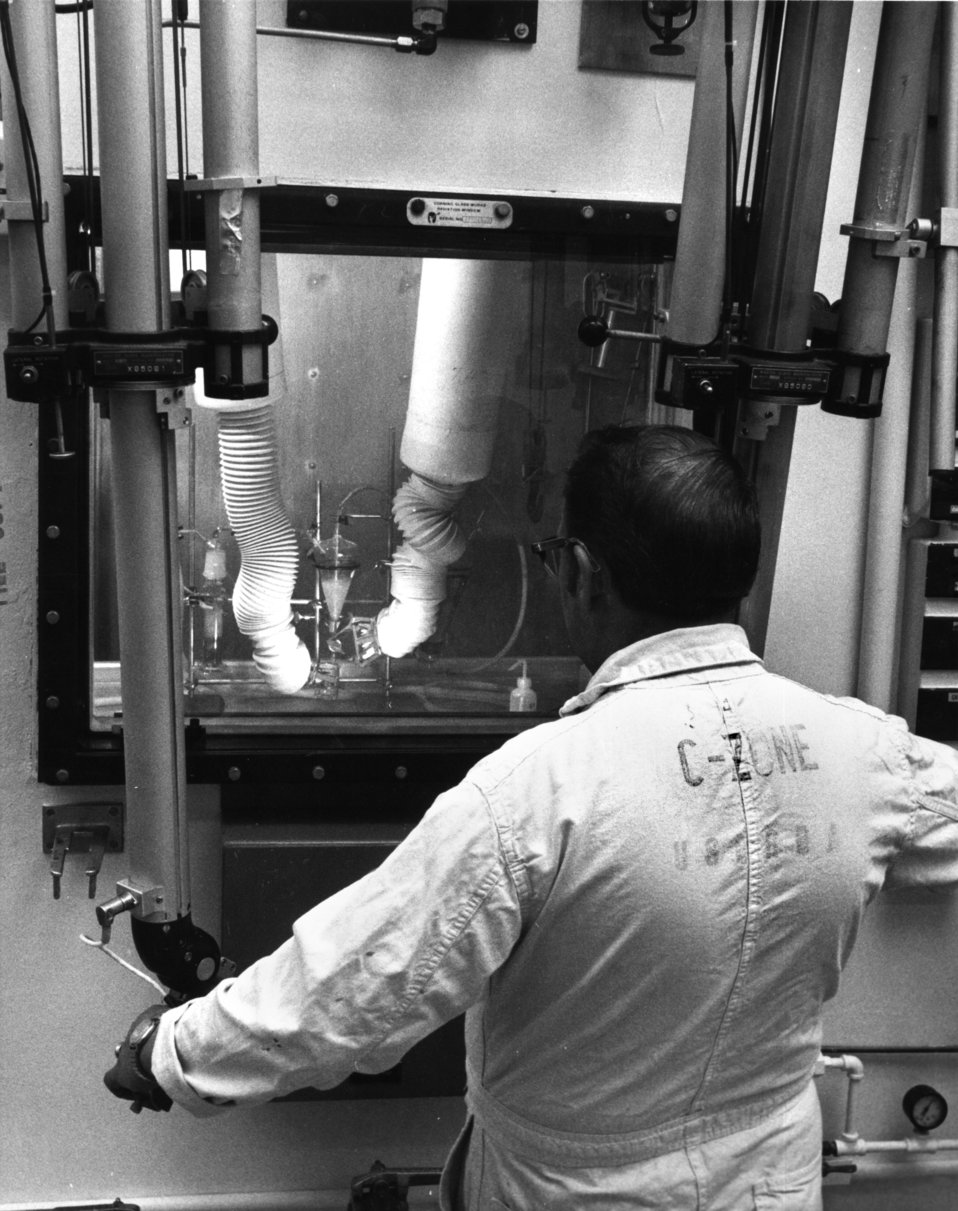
Technician With Manipulators ORNL Hot Cells

78-179 DOE photo Frank Hoffman 3-15-1978 Oak Ridge Tennessee